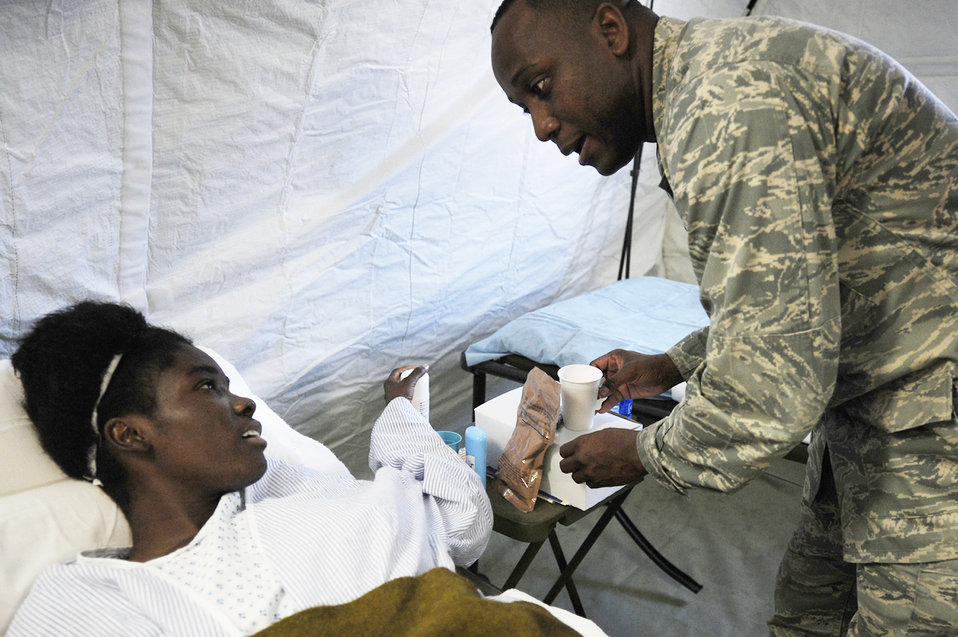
Airmen provide care, compassion to people of Haiti

An Airman from Travis Air Force Base, Calif., treats an earthquake survivor at an expeditionary medical facility Feb. 3, 2010, located along the harbor of Port-au-Prince, Haiti. A 7.0-magnatude earthquake struck Haiti Jan. 12, leaving thousands of Haitians displaced and without access to food, water and vital medical care.